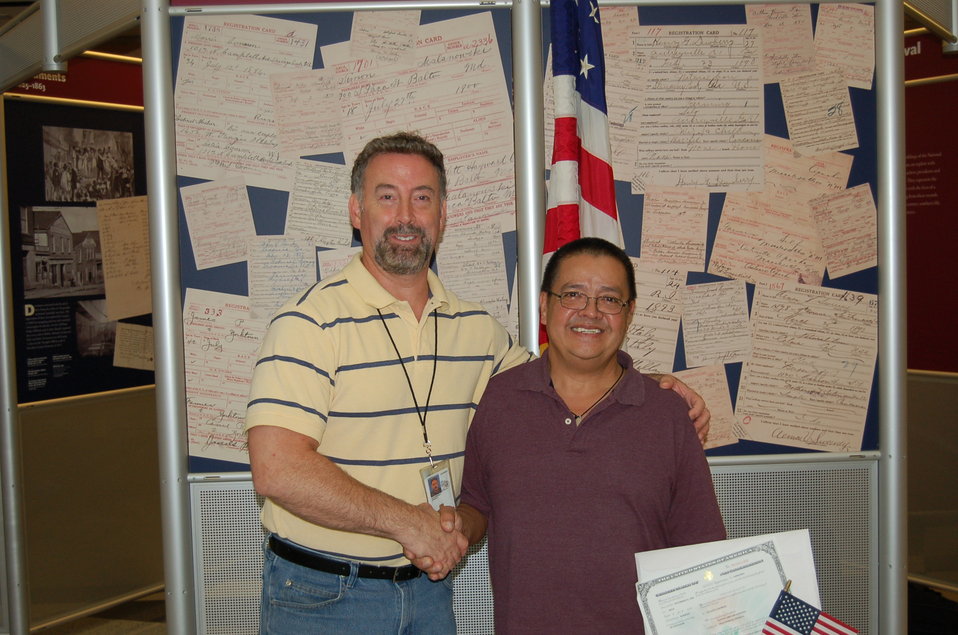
New Citizens